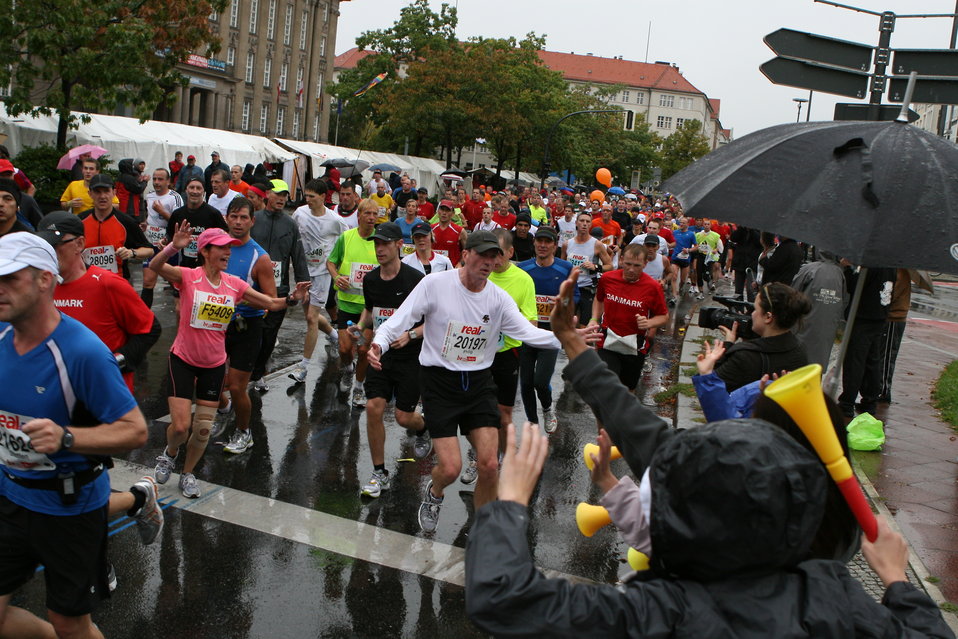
Ambassador Murphy and His Wife Partake in the Berlin Marathon

During the Berlin Marathon, U.S. Ambassador to Germany Philip D. Murphy and his wife spot very special fans on the roadside by the City hall of Berlin-Schöneberg in Berlin, Germany, on September 26, 2010.